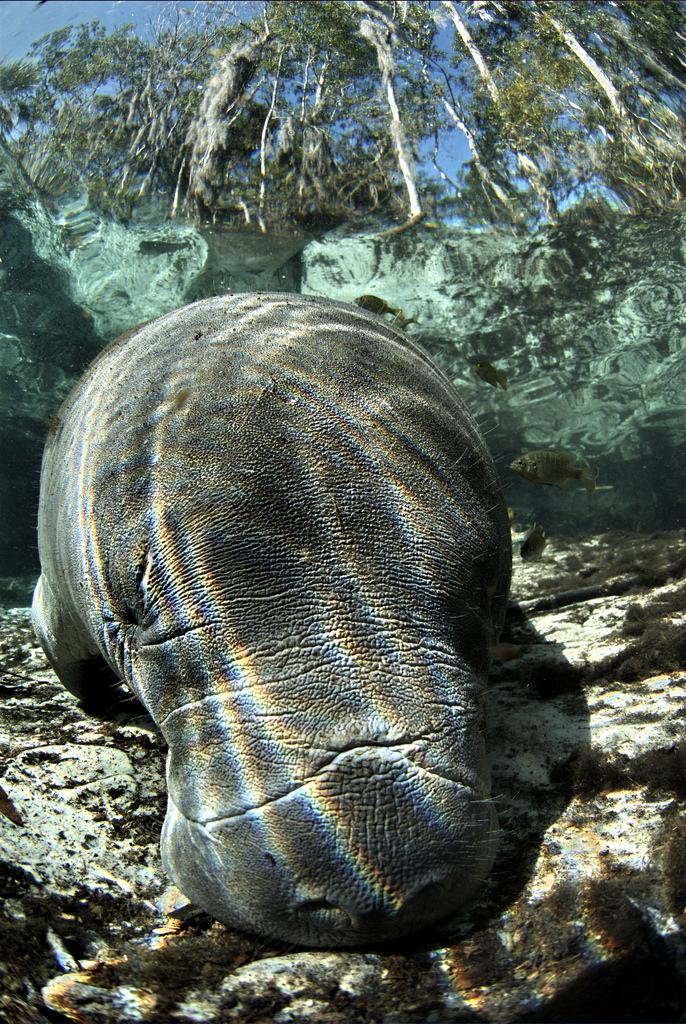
Endangered Florida manatee (Trichechus manatus)

Photo credit: David Hinkel

This manatee is sleeping in shallow water in order to benefit from the sun’s radiant heat on his back, while submerged in the springs 72 F degree waters. During the cold spells, most manatees prefer resting in shallow water for this reason.

The Crystal River National Wildlife Refuge, was established in 1983 specifically for the protection of the endangered West Indian Manatee. This unique refuge preserves the last unspoiled and undeveloped habitat in Kings Bay, which forms the headwaters of the Crystal River. The refuge preserves the warm water spring havens, which provide critical habitat for the manatee populations that migrate here each winter.